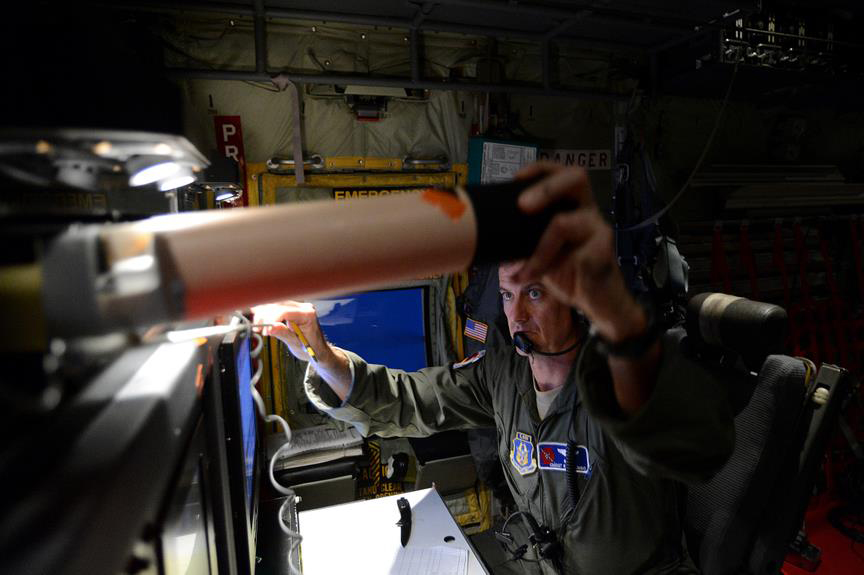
Hurricane Sandy

A WC-130J Hercules loadmaster Chief Master Sgt. Rick Cumbo, from the 53rd Weather Reconnaissance Squadron, prepares a drop sonde used to measure and transfer weather data back to the aircraft while flying on a weather reconnaissance mission into Hurricane Sandy Oct. 29, 2012, somewhere over the Eastern coastline. The drop sonde is ejected into the storm from the WC-130J using a specialized launcher, which then transmits real-time weather information back to the aircraft. The 53rd WRS conducted weather reconnaissance missions in preparation for Hurricane Sandy making landfall along the Eastern coastline of the United States.